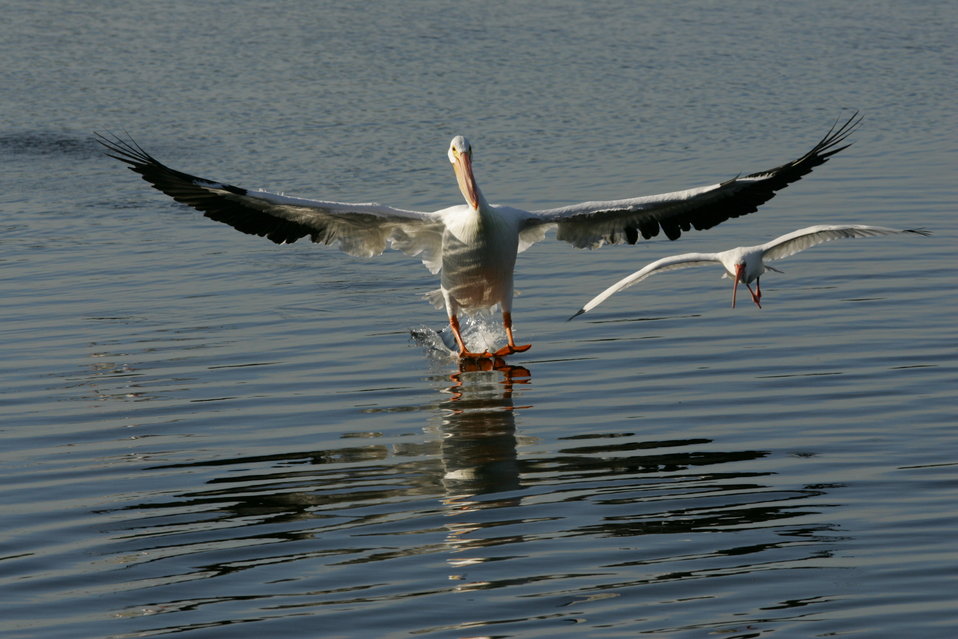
American White Pelican and White Ibis, J.N. 'Ding' Darling NWR

Coming in for a landing at J.N. 'Ding'Darling National Wildlife Refuge, Florida.